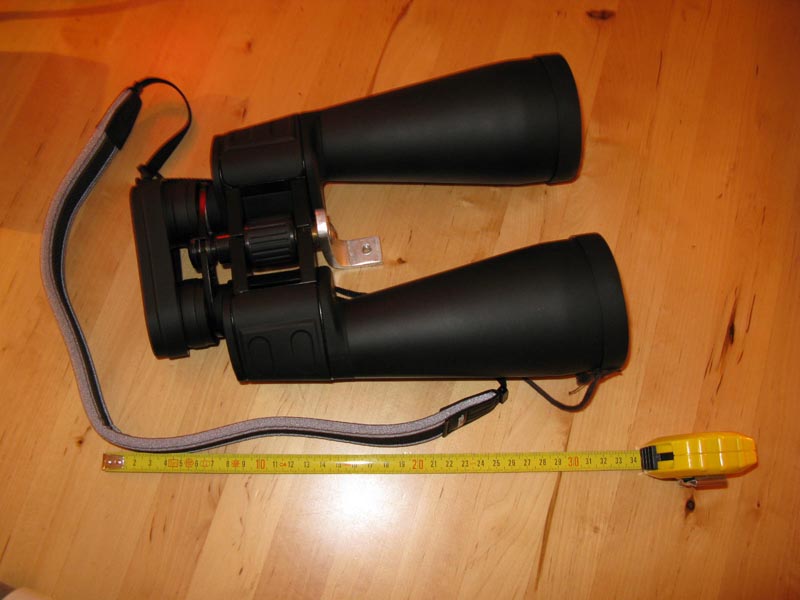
15x70 binoculars for astronomical use which are large, but not too large.